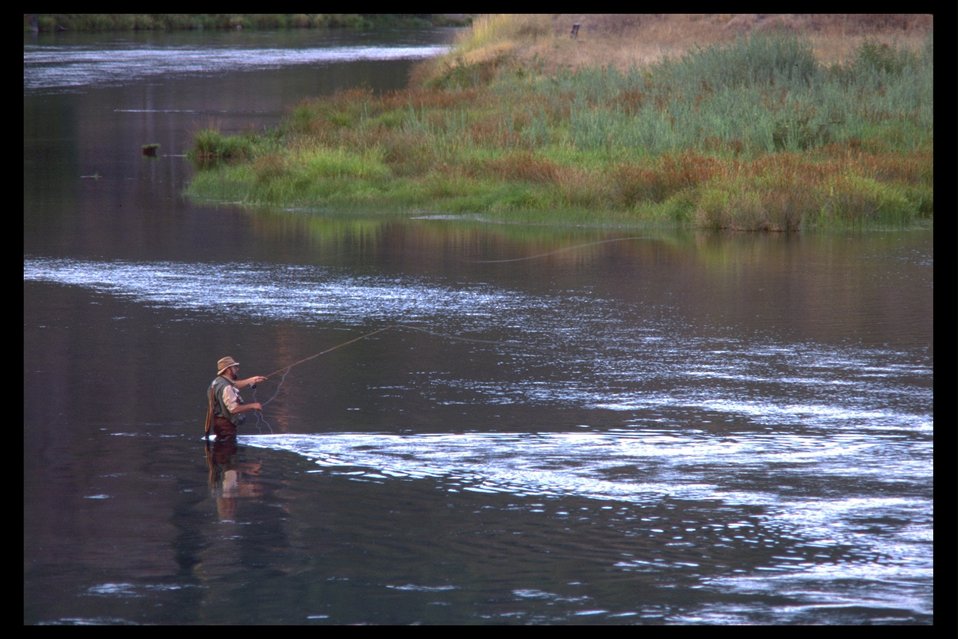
Fly fisherman at "holy-water" (at Lost Creek Lake Fish Hatchery).